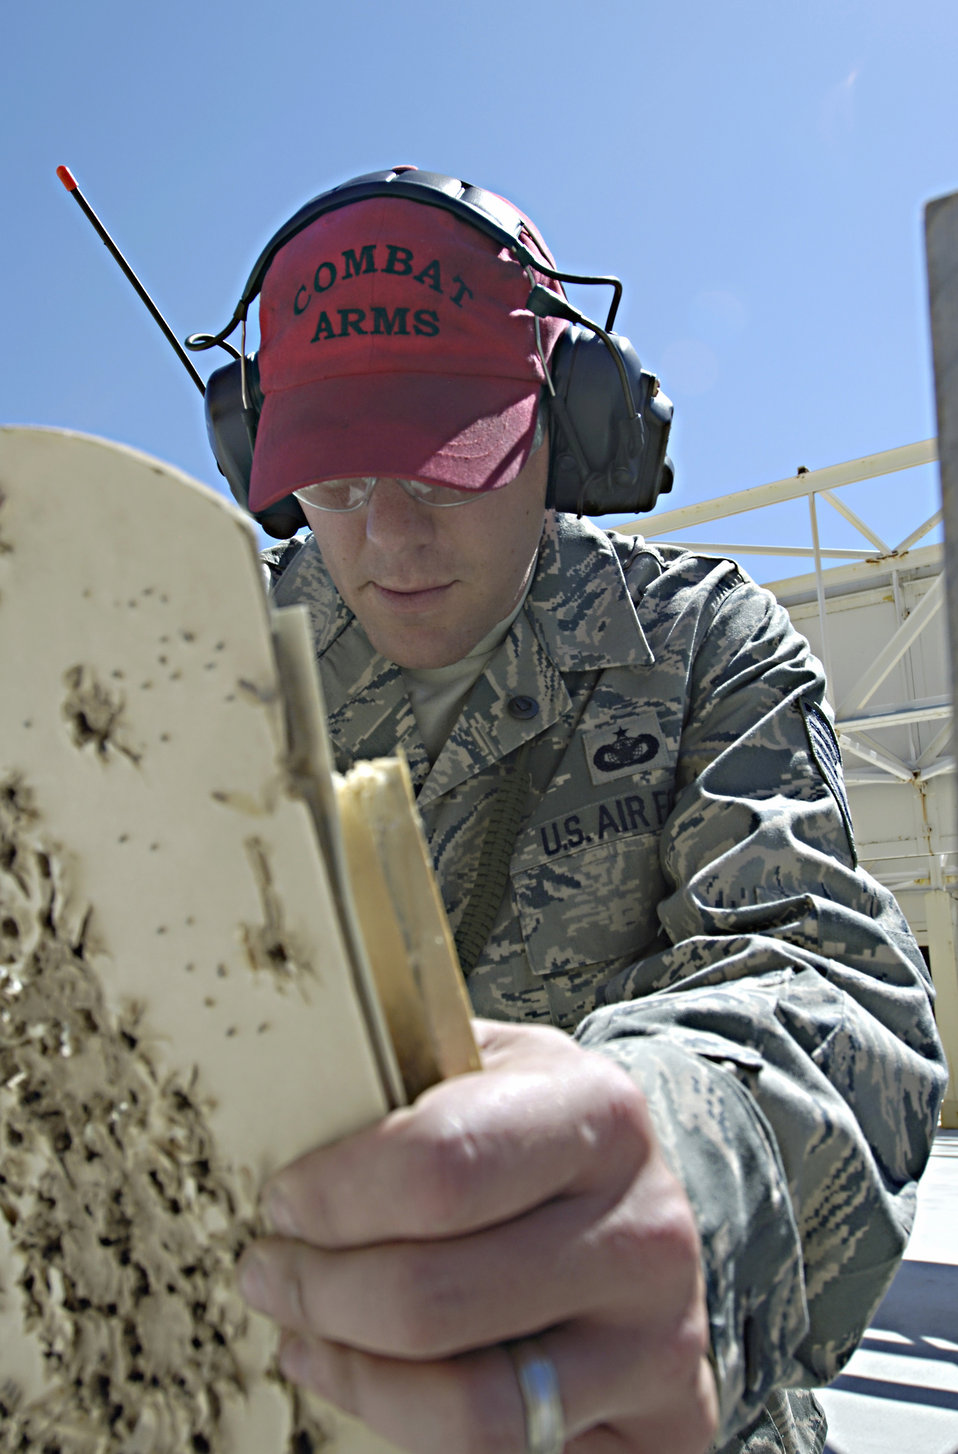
92nd SFS CATM

Tech. Sgt. Gregory Stewart tallies up how many targets students accurately hit with M16-A2 rifles July 8, 2010, at the combat arms training and maintenance shooting range. Sergeant Stewart the CATM NCO in charge.